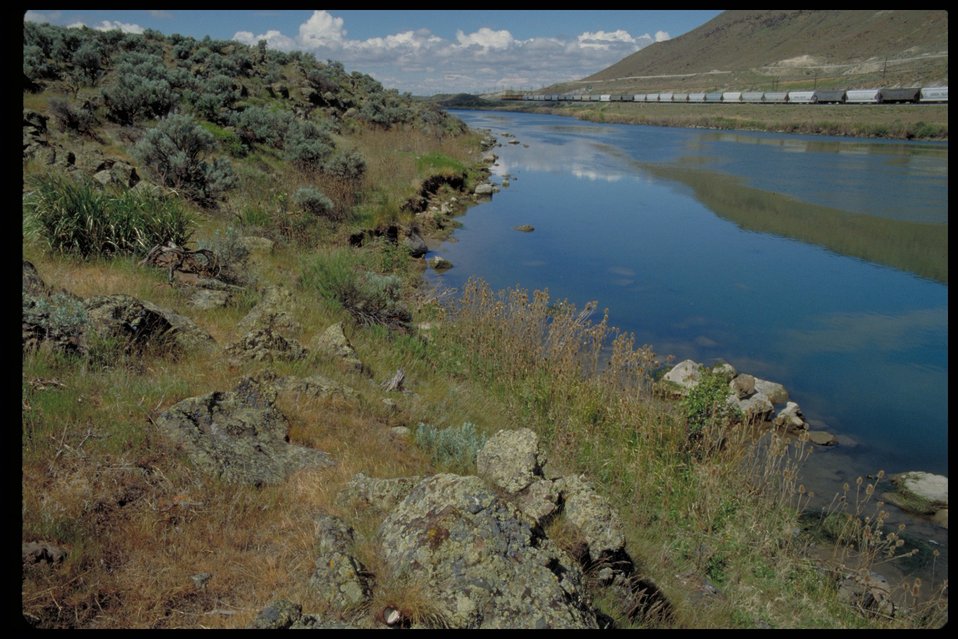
The Narrows Oregon Trail Lower Snake River District